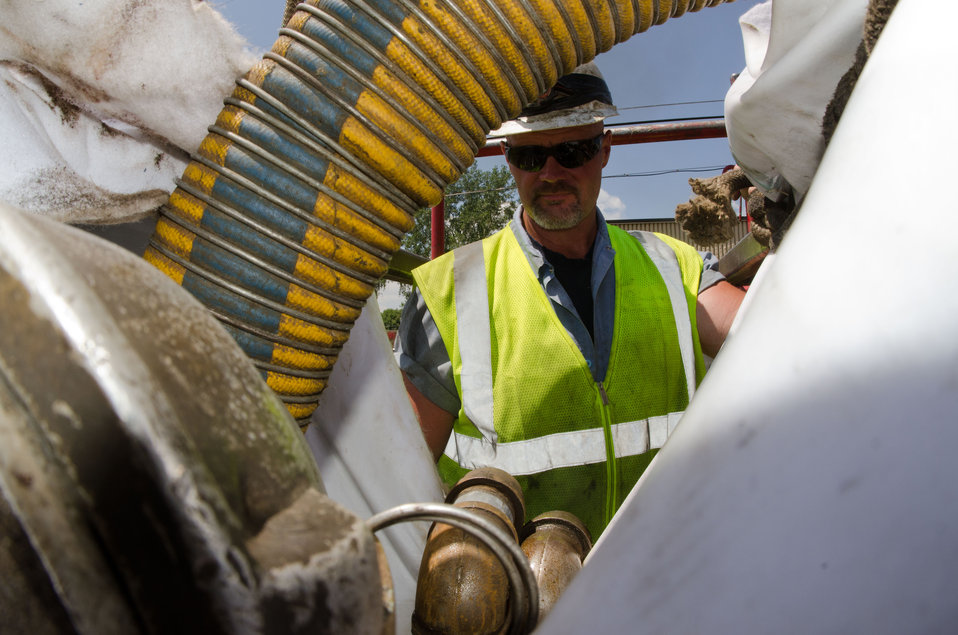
Insituform’s Mack Meher checks the water flow that fills the white resin impregnated fabric lining that goes down the manhole here, and through the existing 50 year old sanitary sewer pipe, to the next manhole, on Tuesday, July 19, 2011; part of Buena Vista Township Phase II Sewer Project, in Michigan, where the United States Department of Agriculture funded the refurbishment and rehabilitation of 45,500 linear feet of defective sewer pipe, and more than 200 manholes; on Tuesday, July 19, 2011. The project includes the construction of an off-site excess flow basin; construction of a pump station; and improvements at the wastewater treatment plant. The system will serve 2,349 residential and 177 commercial customers and will bring the township into compliance with environmental regulations regarding pollutant discharges.
Inspections revealed that the 1960s sanitary sewer system had inflow from storm and rainwater systems and overflowed into the sanitary sewer system. Infiltration was found in the form of cracks, and other failures that allowed groundwater to enter. Rather than digging up the old system, rehabilitation with a cured-in-place-pipe (CIPP) method was chosen. This provides up to a 50% savings and the liner is projected to last 50-100 years. CIPP repair of the 8-30” diameter pipes involves pulling a resin-saturated fabric liner through a damaged pipe, which is then cured with steam or hot water to form a tight-fitting, joint less replacement pipe. Trenchless repair methods require less digging than traditional “dig and replace” repair methods and minimize damage to yards and landscaping. There are two of these teams and one manhole rehabilitation to seal the underground casting frame or brick structure. They process 600-800 feet per day.
Wade Trim Inc. Professional Engineer Tiffany Harrison said about working with the United States Department of Agriculture’s Rural Development “It was very easy, they make it very straight forward, in what paperwork they need. They were always available for questions.
USDA Rural Development has funded water and sewer projects in 117 Michigan communities serving more than 94,000 customers.
Senior Advisor to the Secretary of Agriculture Doug O’Brien said, “America will win the future by out-building, out-educating and out-innovating the world,” O'Brien said. “The Obama Administration is committed to the residents and business owners of Buena Vista Township in building the infrastructure needed to protect our environment and ensure clean water for future generations.” Being almost entirely surrounded by the Great Lakes, Michigan residents know that a small problem upstream usually leads to much bigger problems downstream and that the impact of water pollution extends far beyond the immediate community.